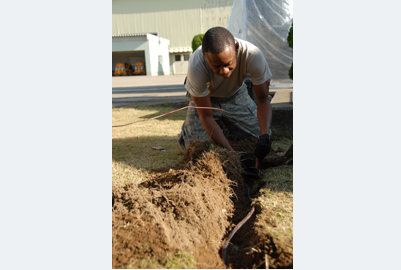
Keen Sword 2010

Staff Sgt. Albert Turner lays grounding in a hole to protect communication equipment Dec. 1, 2010, at Komatsu Air Self-Defense Force Base, Japan. Members from the 644th Combat Commununications Squadron are working at Komatsu JASDF Base in support of the joint, bilateral exercise, Keen Sword 2011. Keen Sword is a regularly scheduled exercise that strengthens Japan-U.S. military interoperability and meets mutual defense objectives.